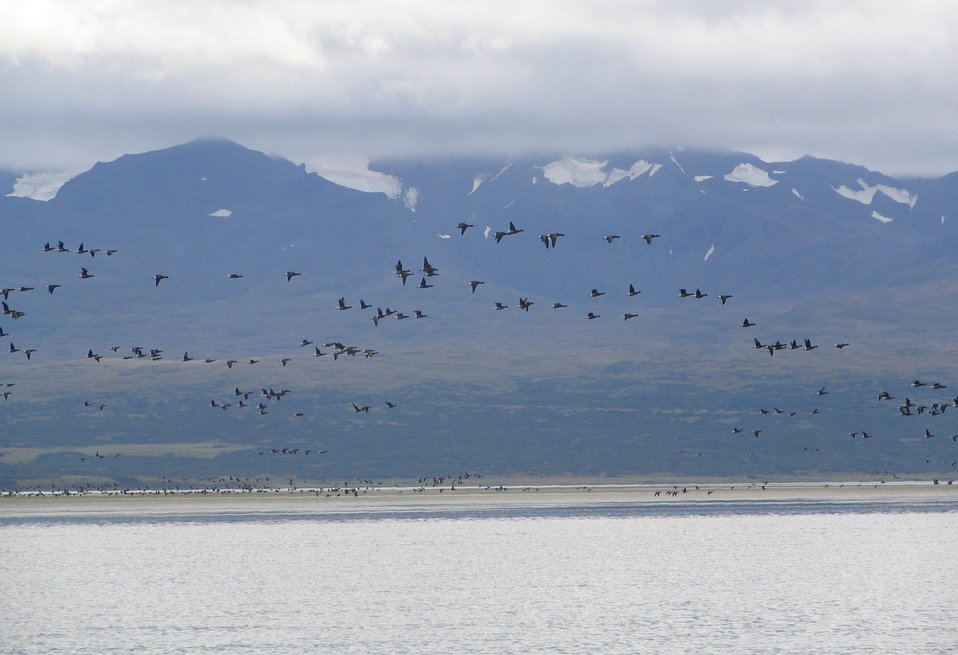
Brant at Izembek Lagoon

Izembek National Wildlife Refuge